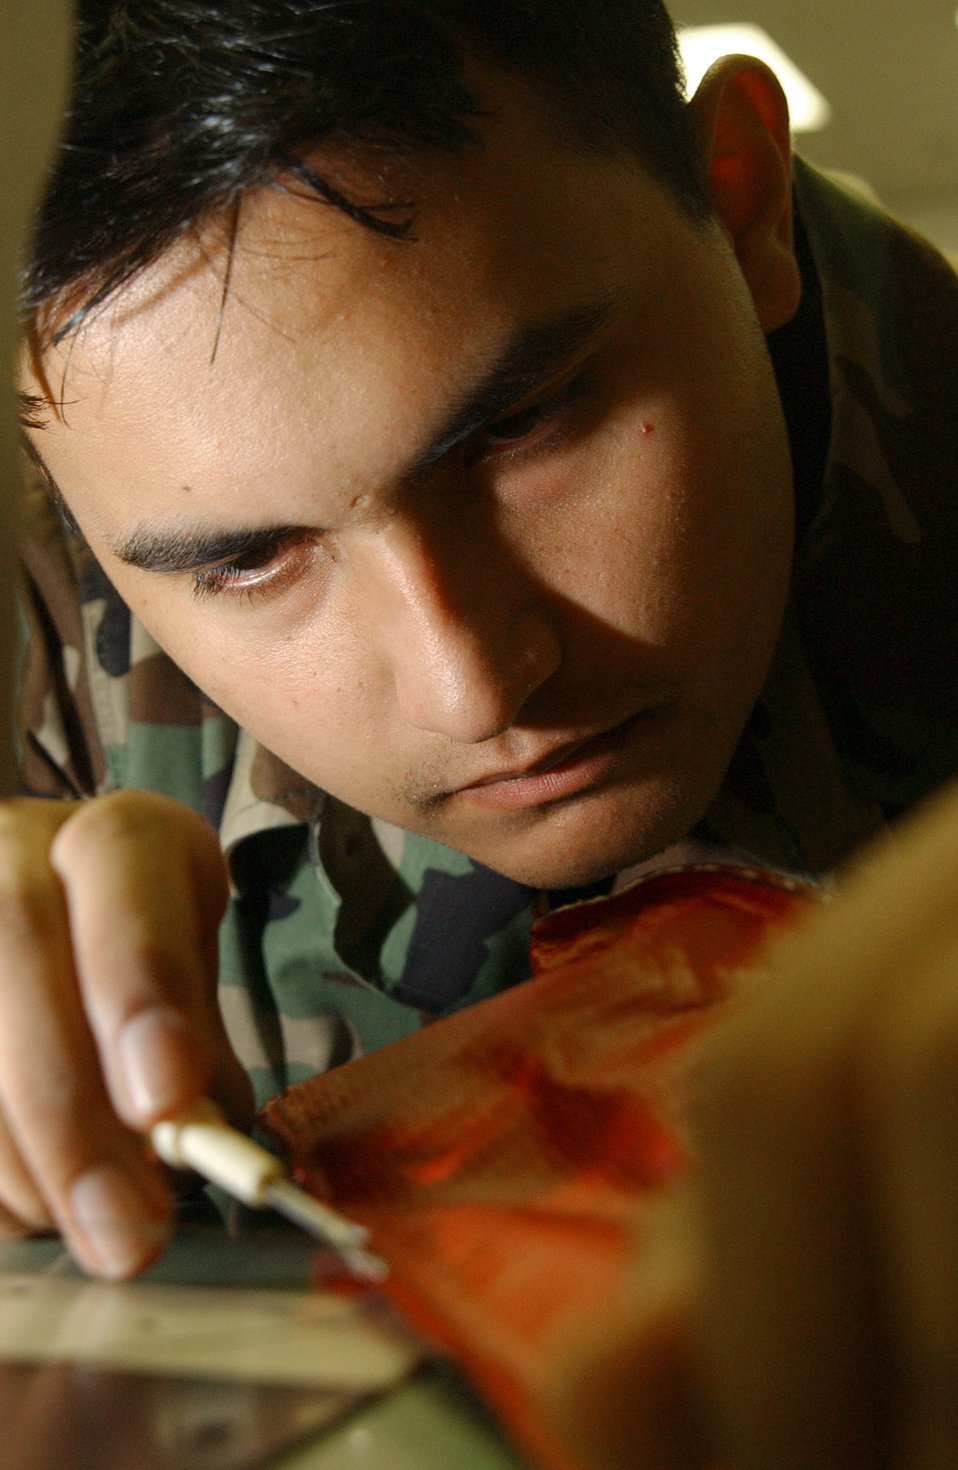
Survival Equipment

Airman 1st Class Joseph Elsey sews a cover for the exhaust of a KC-135 Stratotanker Wednesday, March 22, 2006, at MacDill Air Force Base, Fla. The exhaust covers are used to prevent water and other debris from entering the exhaust of an aircraft. He is a survival equipment apprentice with the 6th Maintenance Squadron.